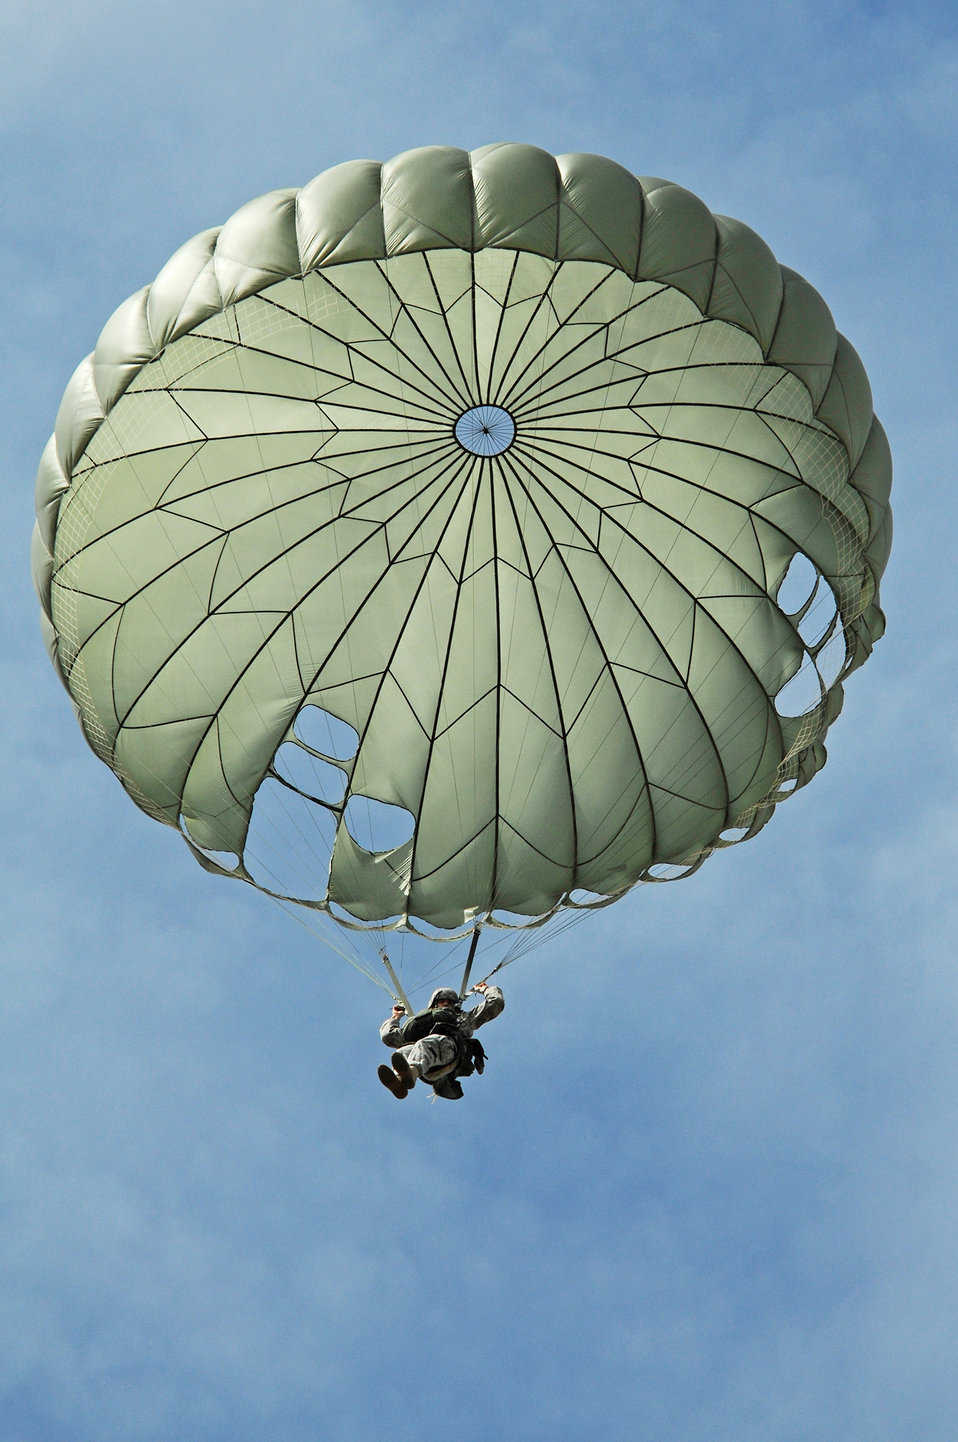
5 NATO countries take part in jump week

A U.S. Soldier parachutes over the Bunker drop zone Aug. 13 in southwestern Germany. U.S. Soldiers and Airmen performed a combined airborne jump with four other NATO countries during International Jump Week.